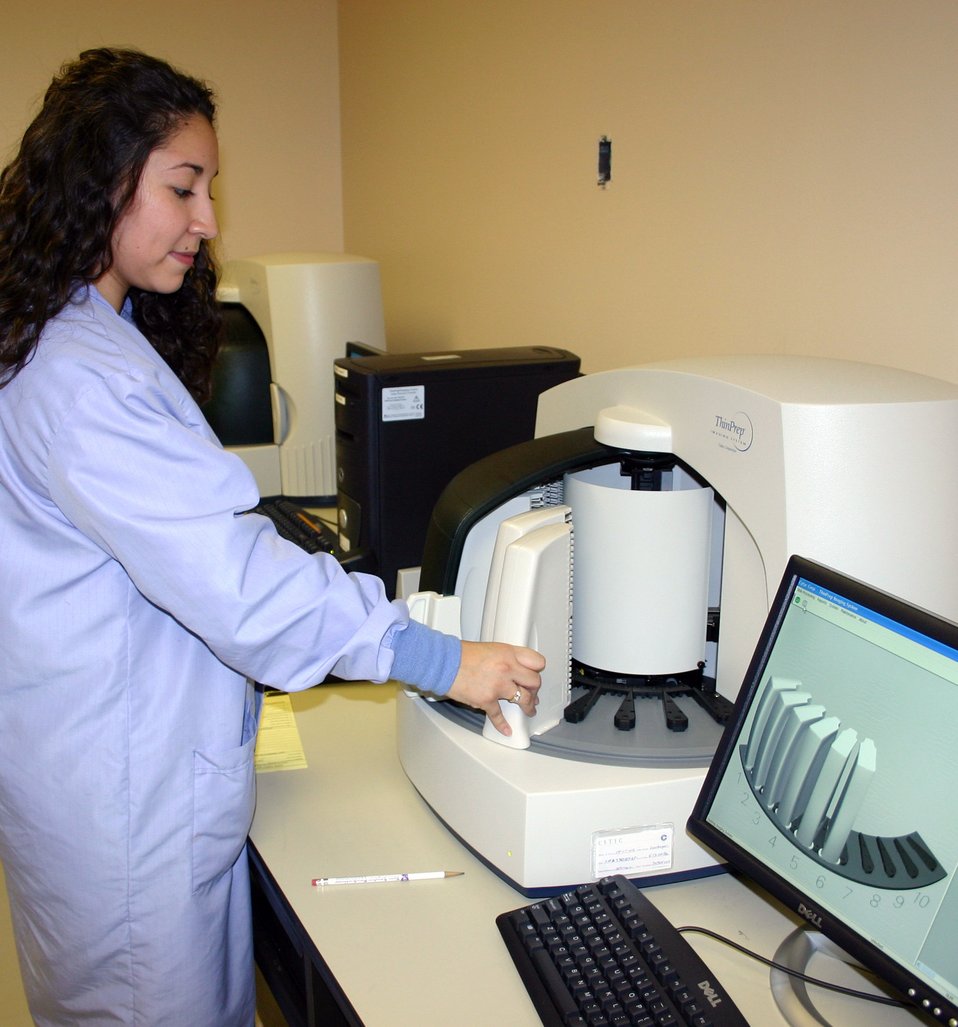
Cytology

LACKLAND AIR FORCE BASE, Texas (AFPN) -- Cytology technician Roxanne Toscano loads slide racks into the new computer-enhanced digital imager. The new technology uses computer-assisted imaging and will increase productivity by 65 to 75 percent. It will allow the Air Force to combine the seven current cytology centers into one center here at Wilford Hall Medical Center's 859th Diagnostics and Therapeutics Squadron.